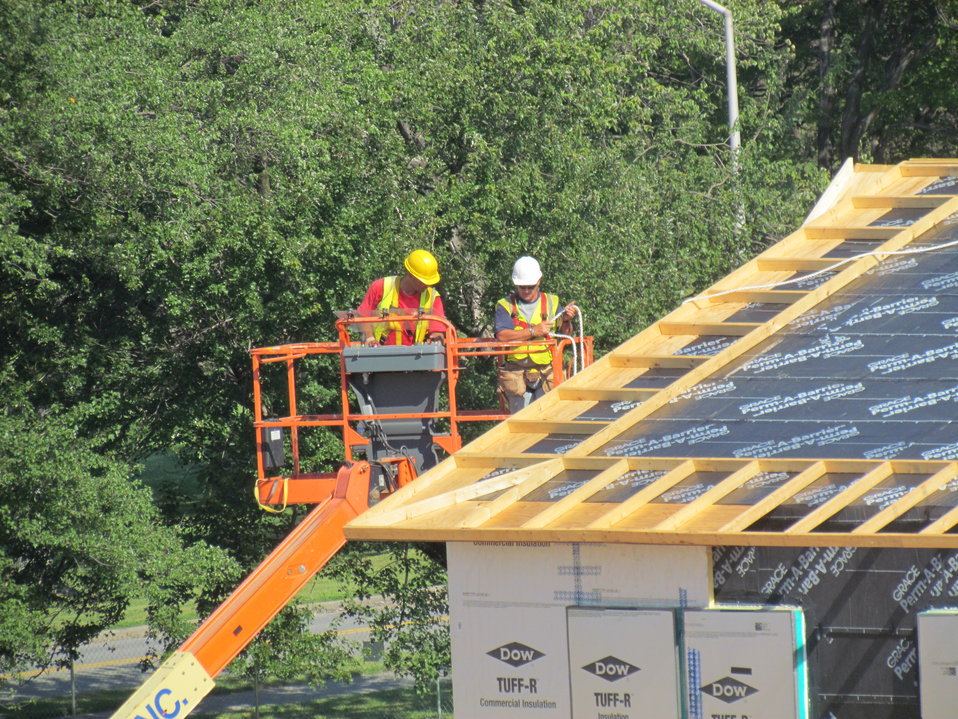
Net-Zero Energy Residential Test Facility - Photo showing workmen adding structure for overhangs.